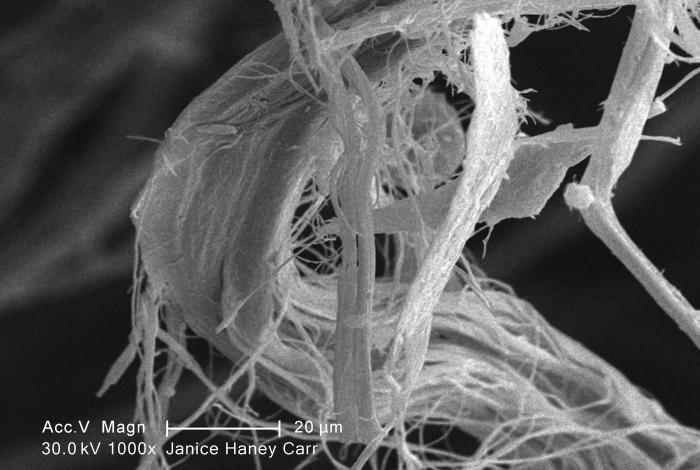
Under a high magnification of 1000X, this scanning electron micrograph (SEM) revealed some of the microcrystalline ultrastructure exhibited by a piece of raw chrysotile, or white asbestos, which had been excavated from the Lowell Asbestos Mine on Belvidere Mountain, Vermont.